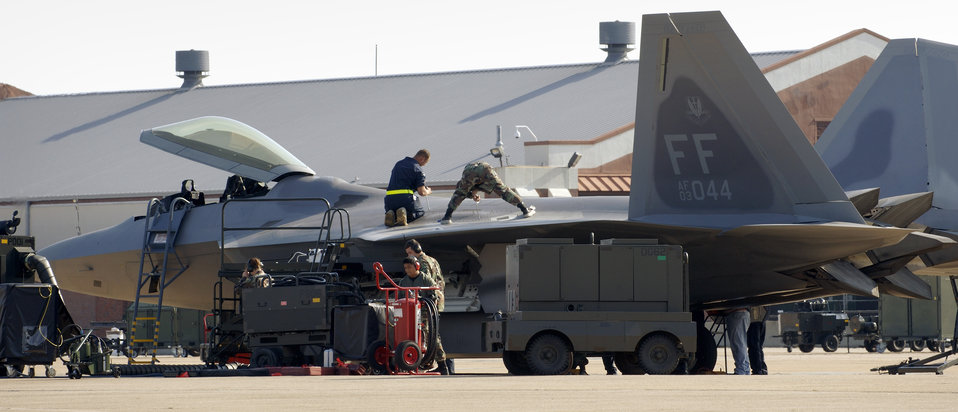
Combat Hammer

LANGLEY AIR FORCE BASE, Va. -- Airmen with the 27th Aircraft Maintenance Unit make final inspection checks on an F/A-22 Raptor before launching it. The Raptor was bound for Hill Air Force Base, Utah. The unit deployed there Oct. 15 with a twofold goal: complete a deployment and to generate a combat-effective sortie rate away while deployed.